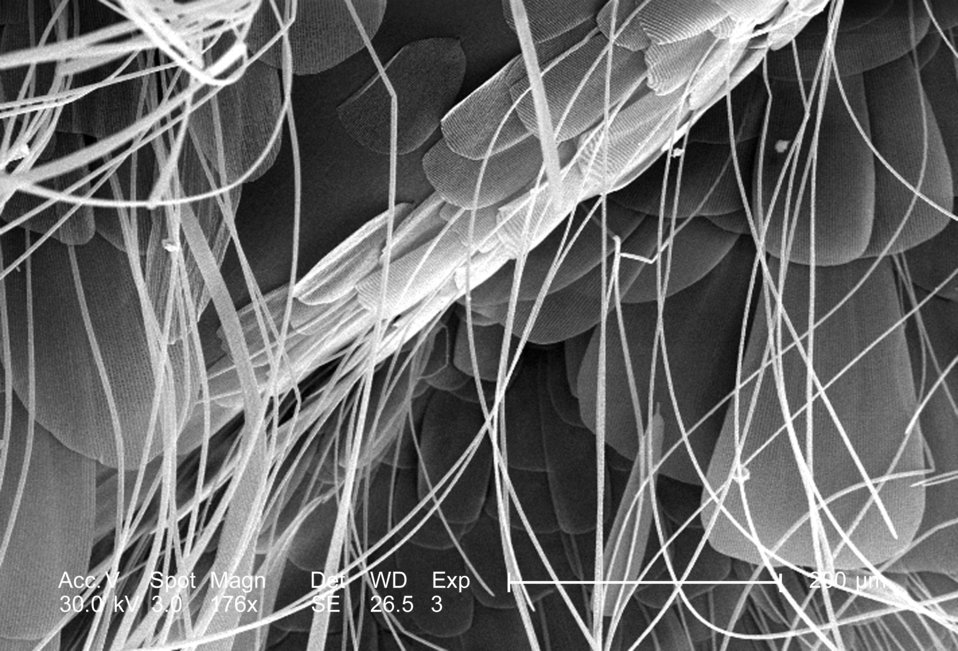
Under a relatively-low magnification of 176x, this scanning electron micrograph (SEM) depicted a view of the exoskeletal structures found upon the body of an unidentified insect, discovered on the grounds of the Decatur, Georgia suburbs. The exoskeleton, as well as its adnexal structures, including wing scales, sensorial hairs, and antennae are composed of chitin, which is a very hard, linear homopolymer that as a result, is very protective, supportive, and durable.